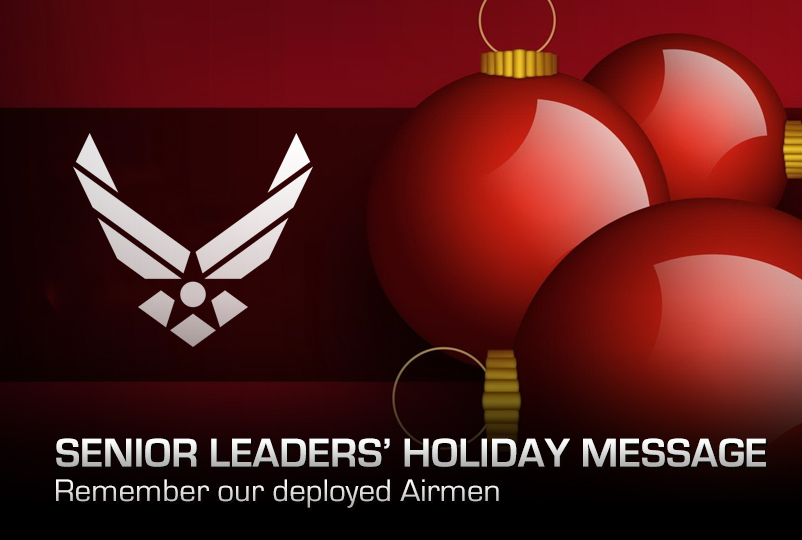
Senior Leaders' Holiday Message